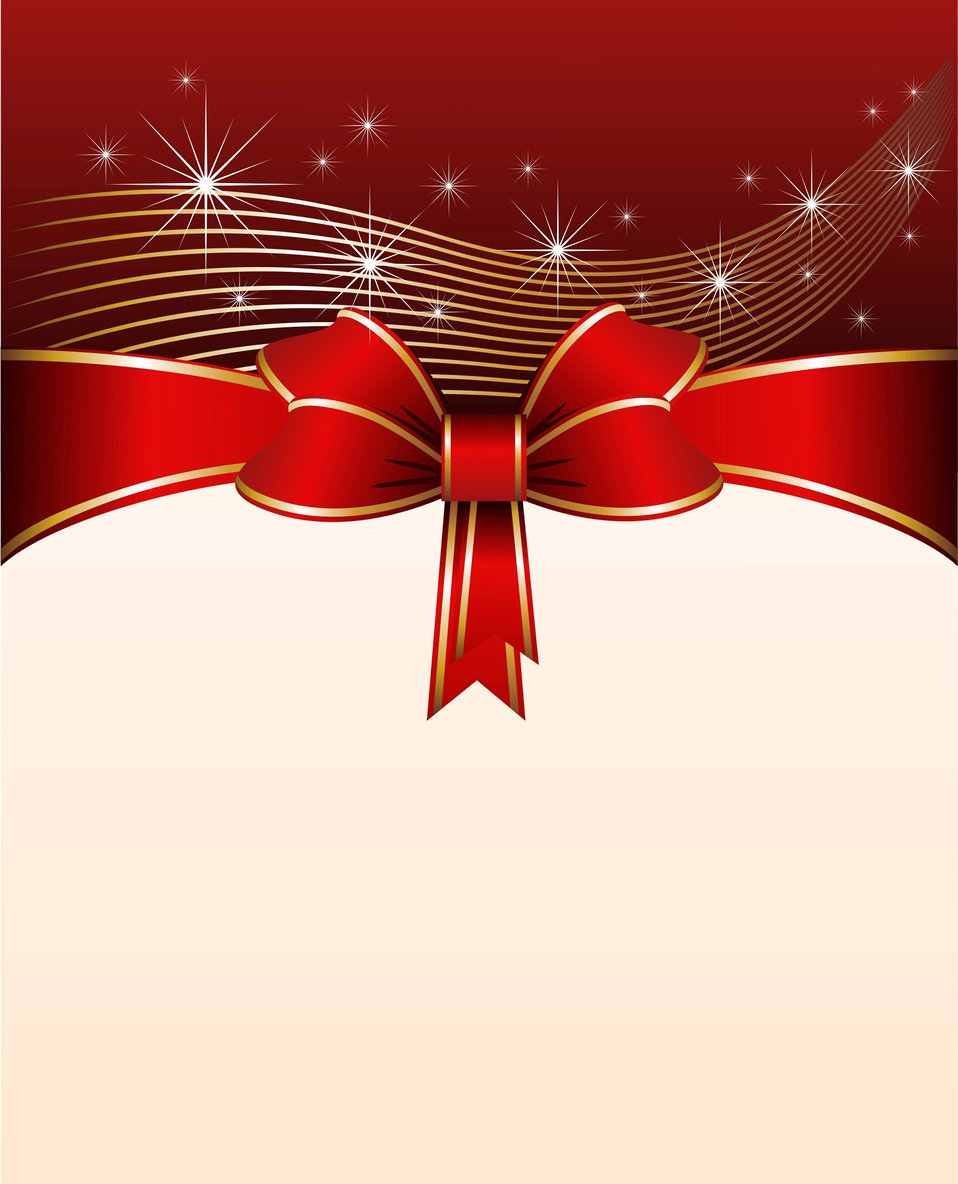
Festive background

Elegant background with red ribbon and bow.